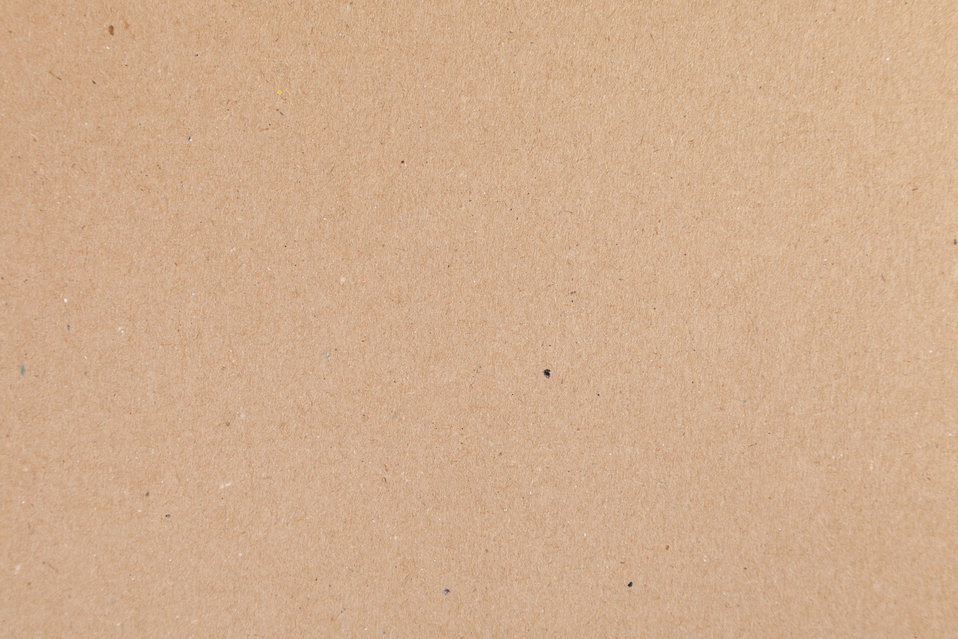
Cardboard texture

Brown cardboard texture image.